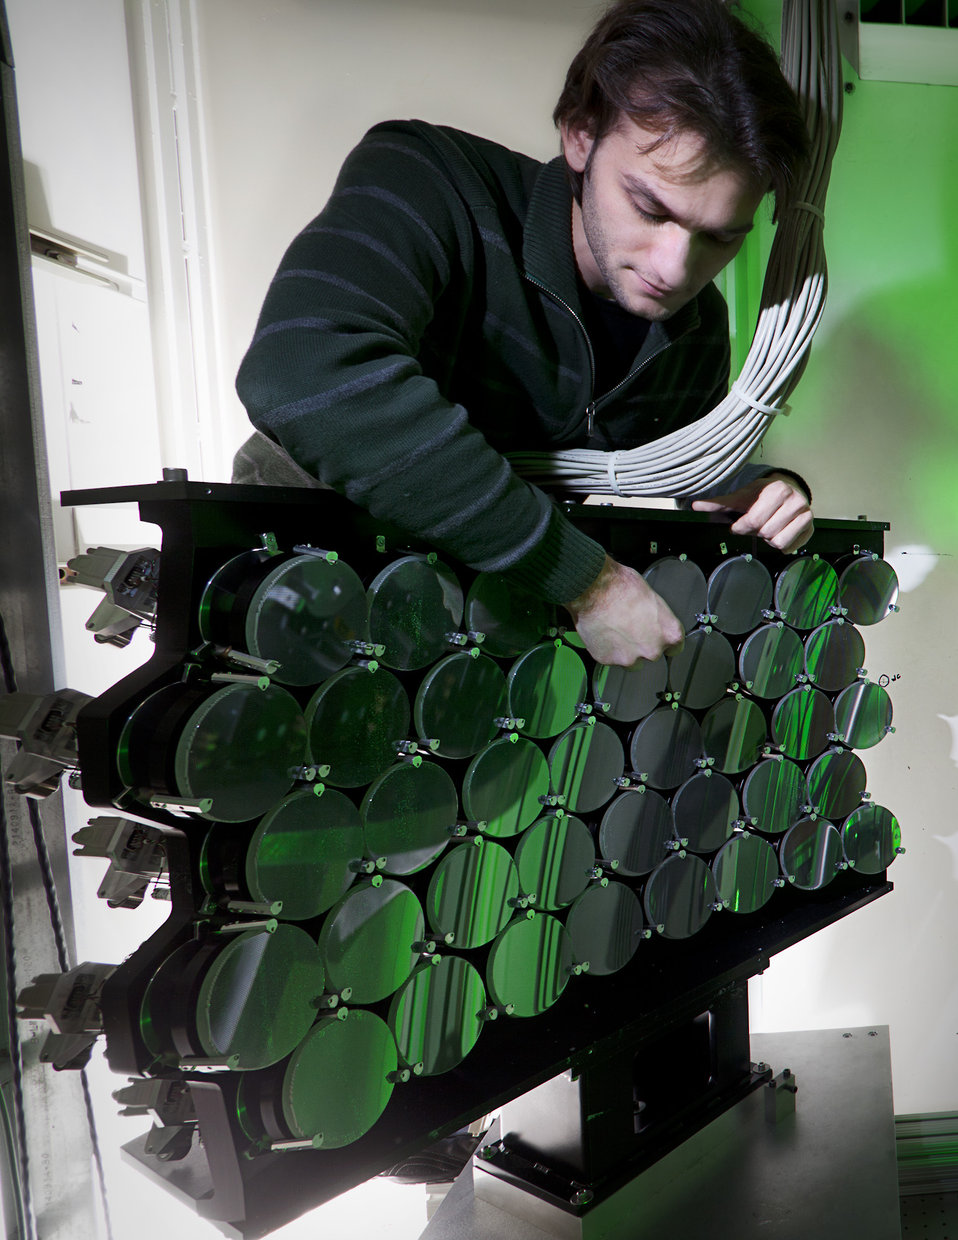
Stanford Synchrotron Radiation Laboratory (SSRL) at dusk scientist tweaks one of the focus mirrors on what is currently the largest Raman spectrometer in the world.
This new setup expands the lab's capabilities in X-ray Raman and X-ray emission spectroscopy-two techniques used to analyze the organization of electrons in solids, liquids and gases.